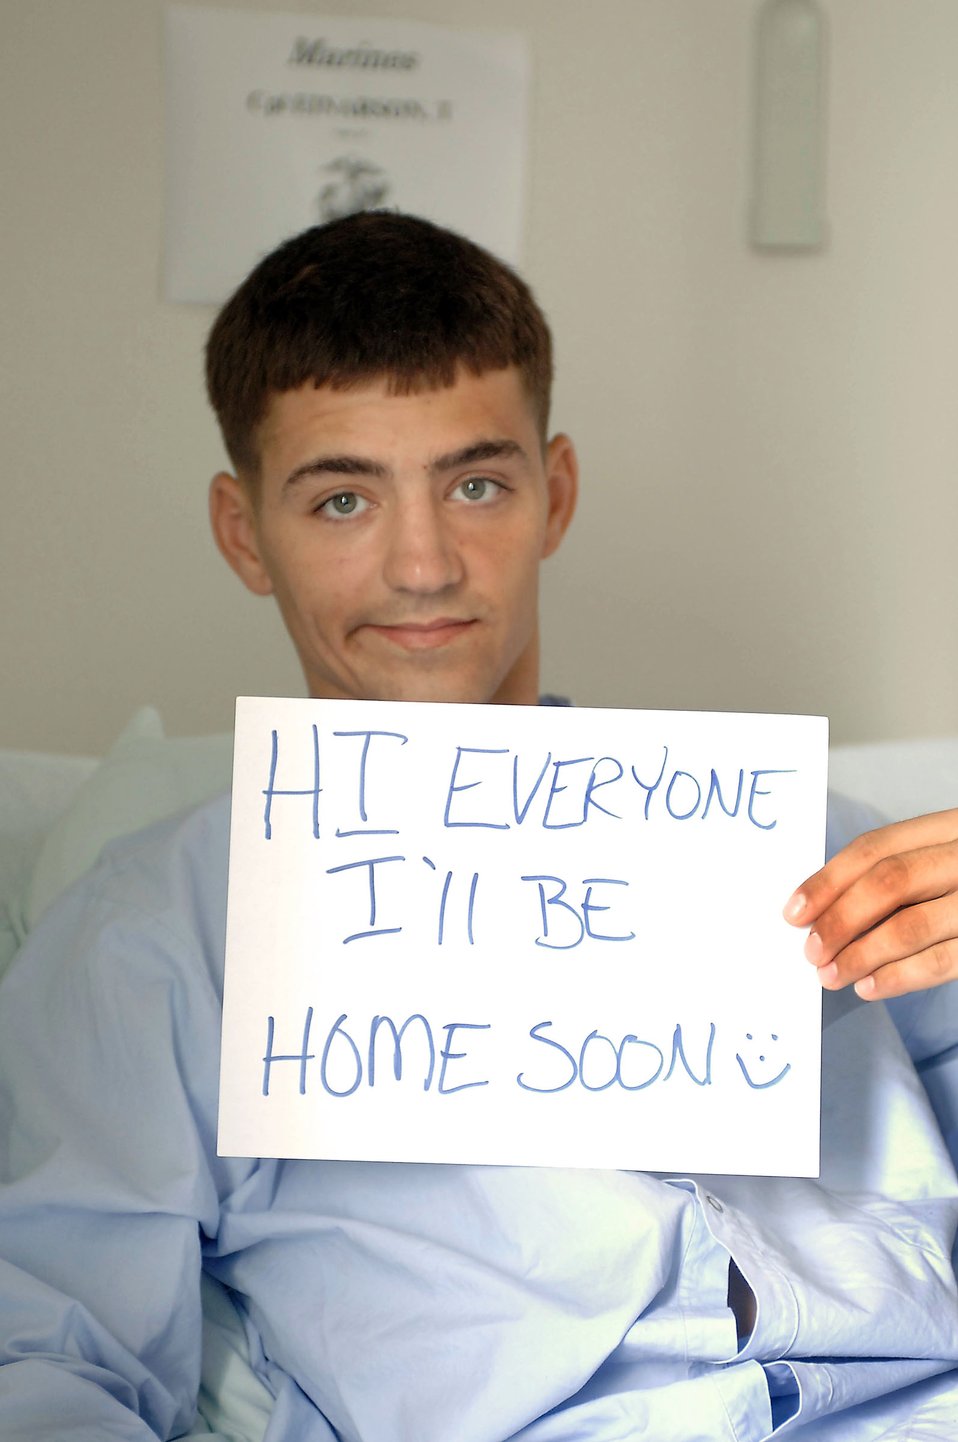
Landstuhl symbol of hope to wounded troops

LANDSTUHL REGIONAL MEDICAL CENTER, Germany -- Marine Corps Cpl. Tyler Einarson is recovering here from gunshots received to the chest and arm while on patrol in northeast Afghanistan in mid-August. The 3rd Marine Division rifleman from Kaneohe Bay Marine Corps Base, Hawaii, is recovering here and receiving care from a joint team of Air Force, Army, Navy, Marine and civlian care providers.